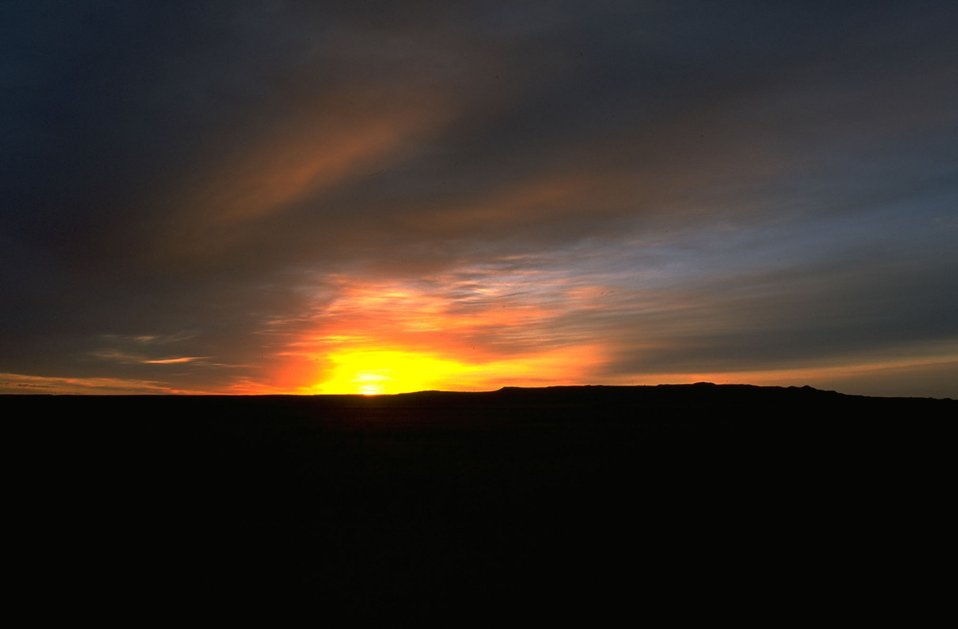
Scenic view of a Sunset on the Yellowstone River